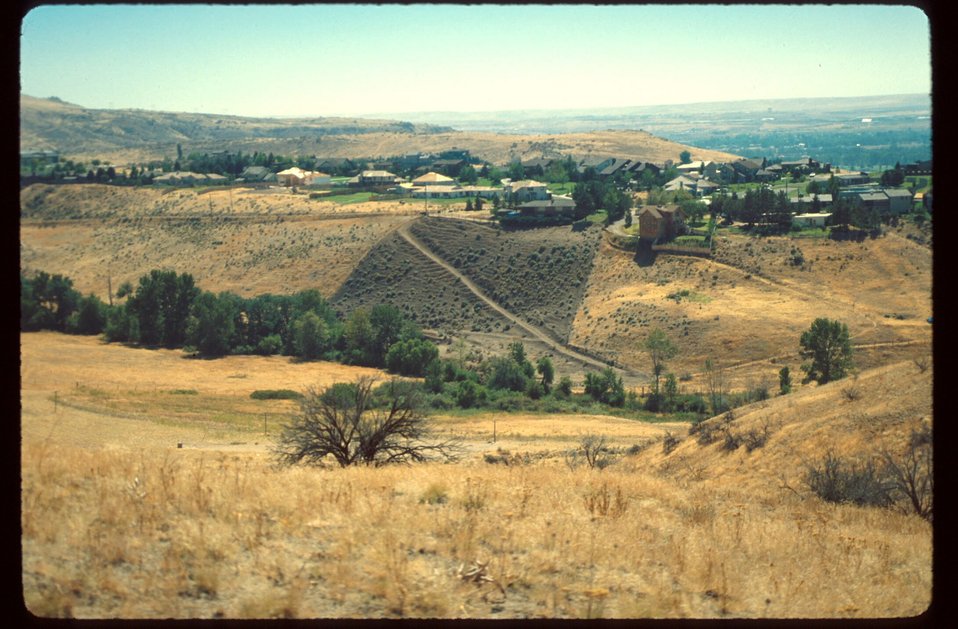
Boise Urban interface fire Range Restoration Project